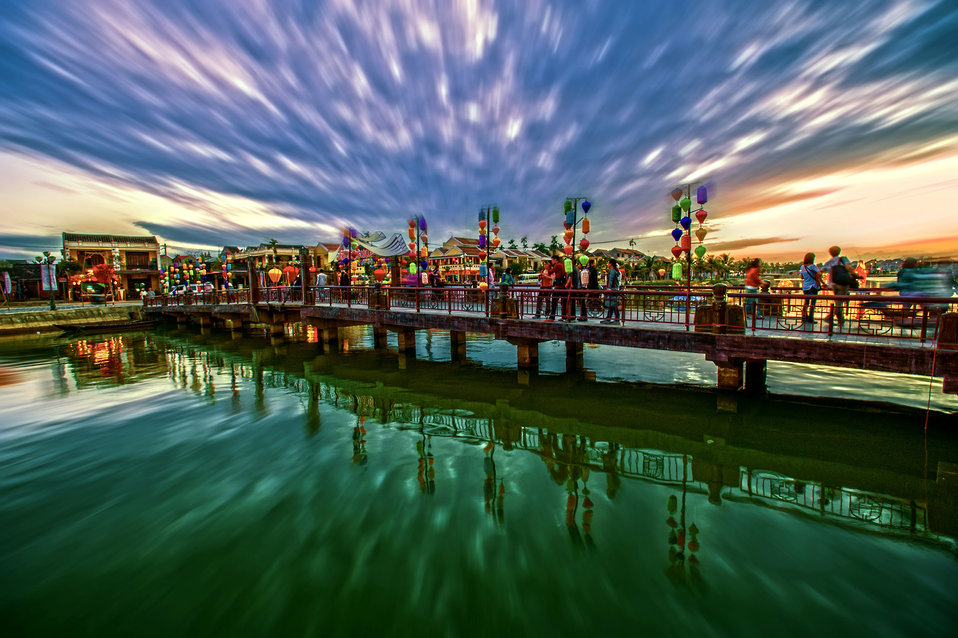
Sunset #2

Sunset on the hoai river, hoi an old town, quang nam province, central vietnam.